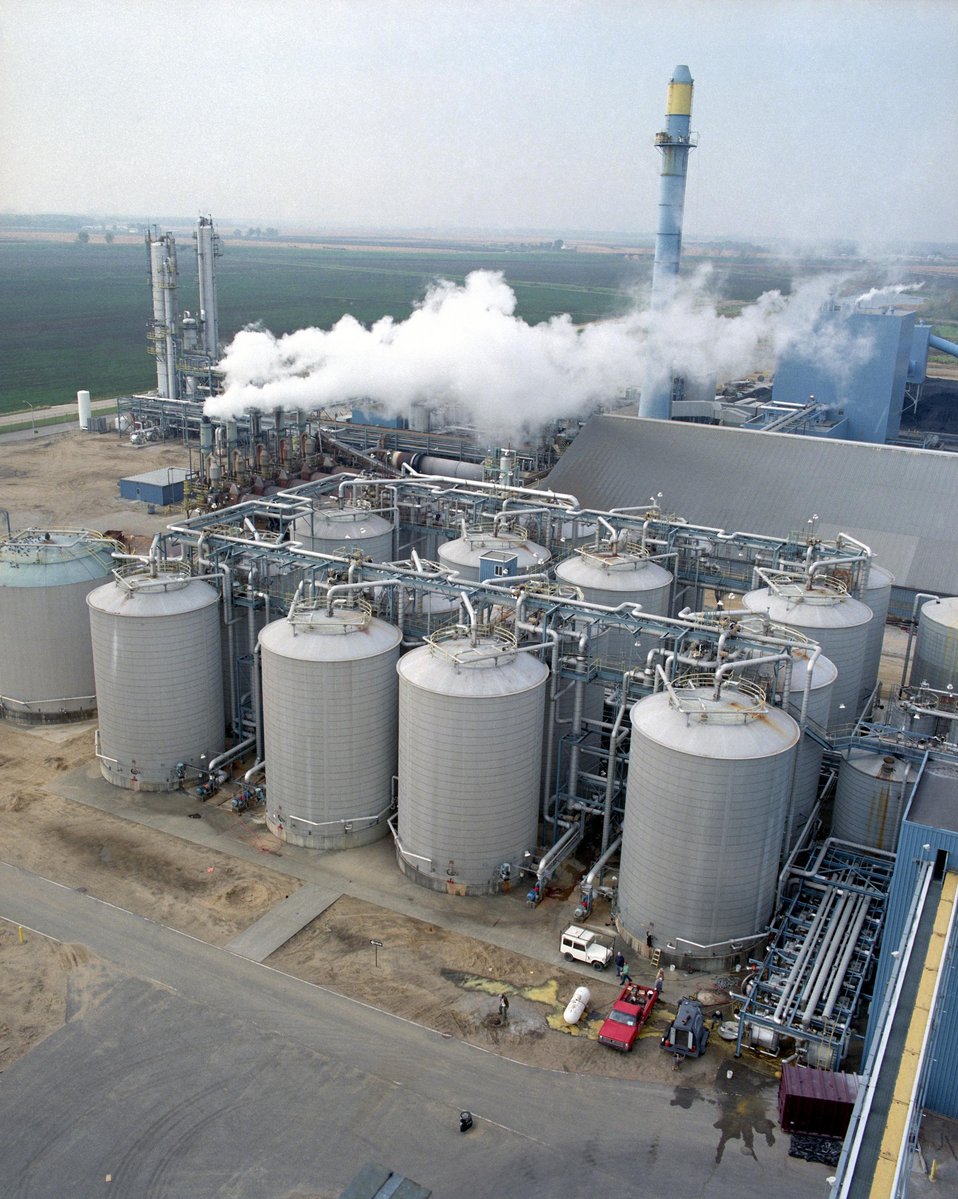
New Energy's Pilot Plant could open the door for a major biofuels industry by demonstrating NREL technology for turning corn fiber or other cellulosic materials into ethanol.